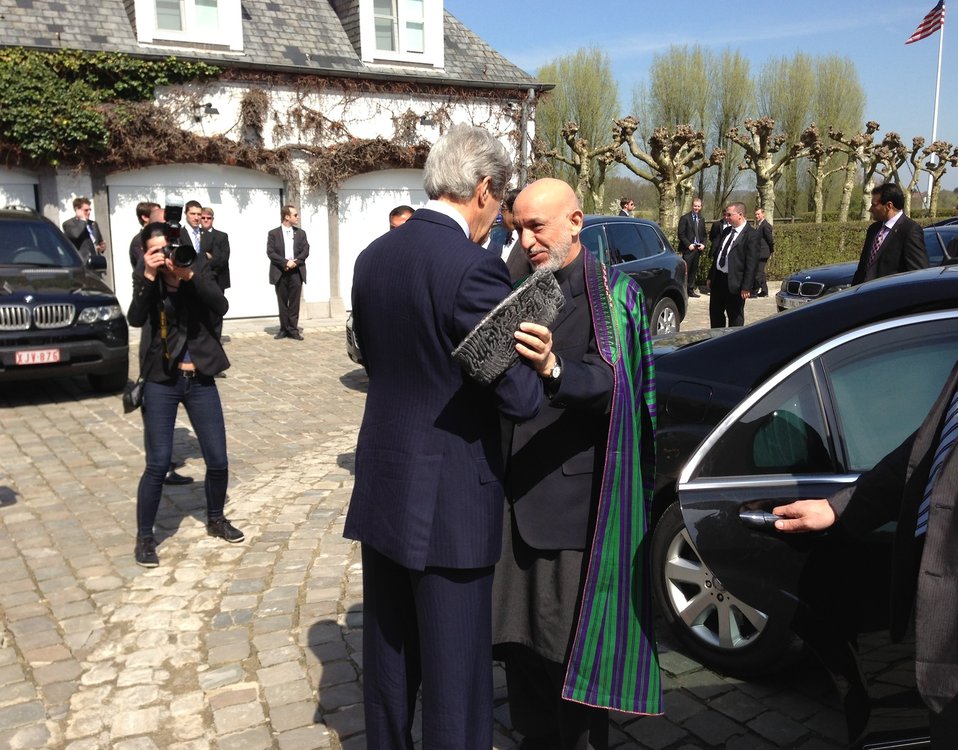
Secretary Kerry Greets Afghan President Hamid Karzai

U.S. Secretary of State John Kerry greets Afghan President Hamid Karzai before a trilateral meeting with Pakistani Chief of Army Staff General Ashfaq Kayani in Brussels, Belgium on April 24, 2013.